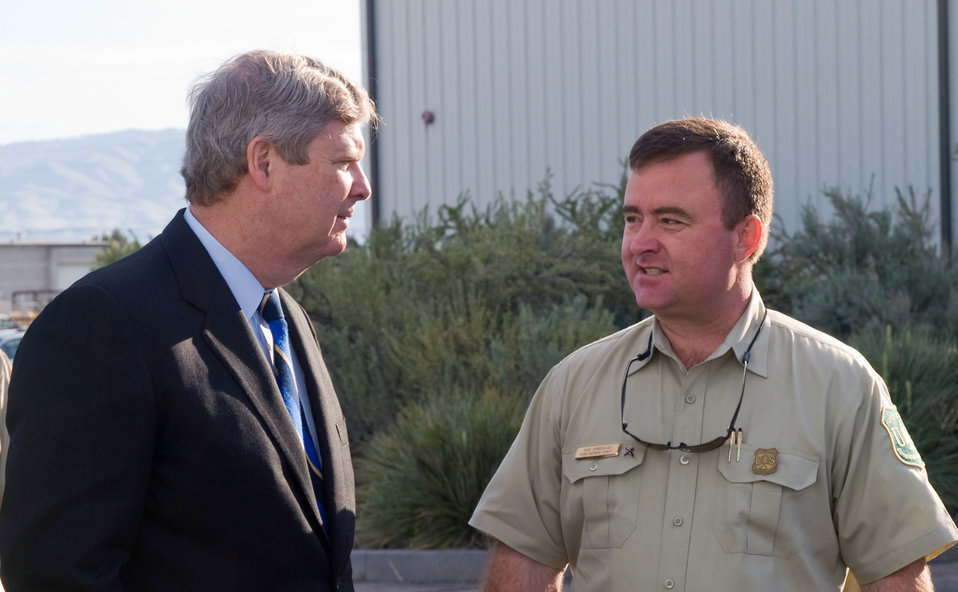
Agriculture Secretary Tom Vilsack speaks to U.S. Forest Service firefighter at the National Interagency Fire Center (NIFC) in Boise, ID on Monday, May 13, 2013. Agriculture Secretary Vilsack and Interior Secretary Jewell provided an outlook for the upcoming fire season and outlined the federal government’s efforts to ensure collaboration in protecting Americans from wildfire.